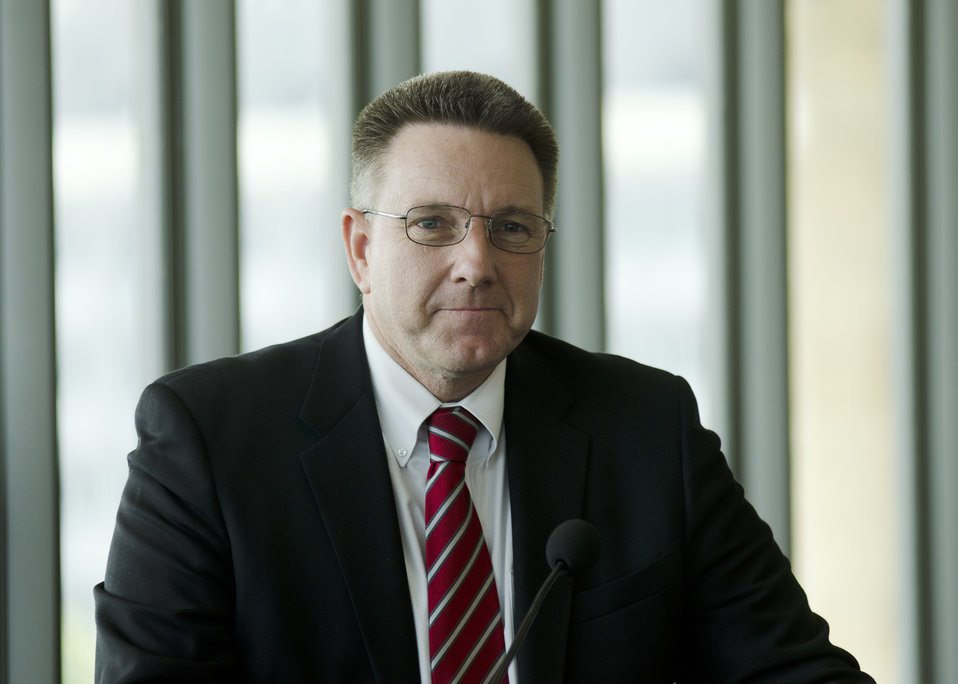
U.S. Department of Agriculture (USDA) Farm Service Agency (FSA) Assistant Deputy Administrator Farm Programs Craig Trimm speaks at the first business meeting of the U.S. Department of Agriculture’s (USDA) Council for Native American Farming and Ranching (CNAFR) held at the National Museum of the American Indian in Washington, D.C., on Tuesday, Aug. 14, 2012. CNAFR was created to advise the Secretary on ways to eliminate barriers to participation for Native American Farmers and Ranchers in USDA programs. The Council was established as part of the Keepseagle settlement, and is conducted under the oversight of USDA's Office of Tribal Relations under the Office of the Secretary of Agriculture.